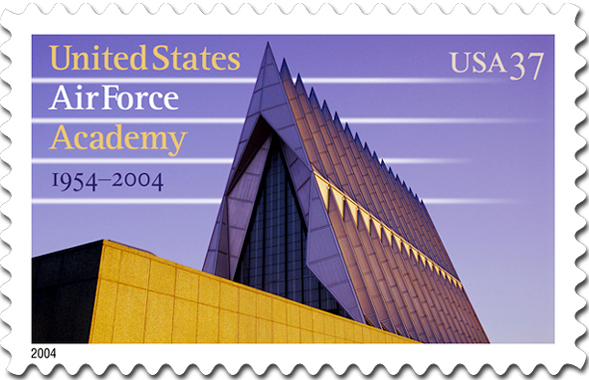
Academy stamp unveiled

U.S. AIR FORCE ACADEMY, Colo. -- The commemorative 37-cent stamp honors the U.S. Air Force Academy's 50 years of service to the nation. It was unveiled at a ceremony here April 1 by U.S. Postal Service officials.